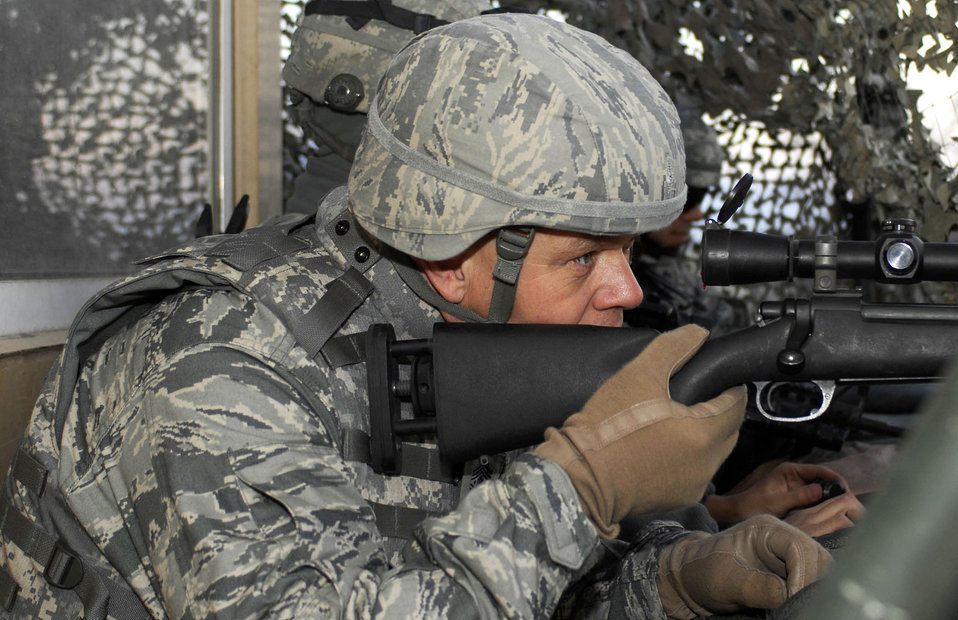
Chief Master Sgt. of the Air Force James A. Roy looks through the scope of an M-24 sniper weapon at one of observation towers Nov. 28, 2009, at Bagram Airfield, Afghanistan.